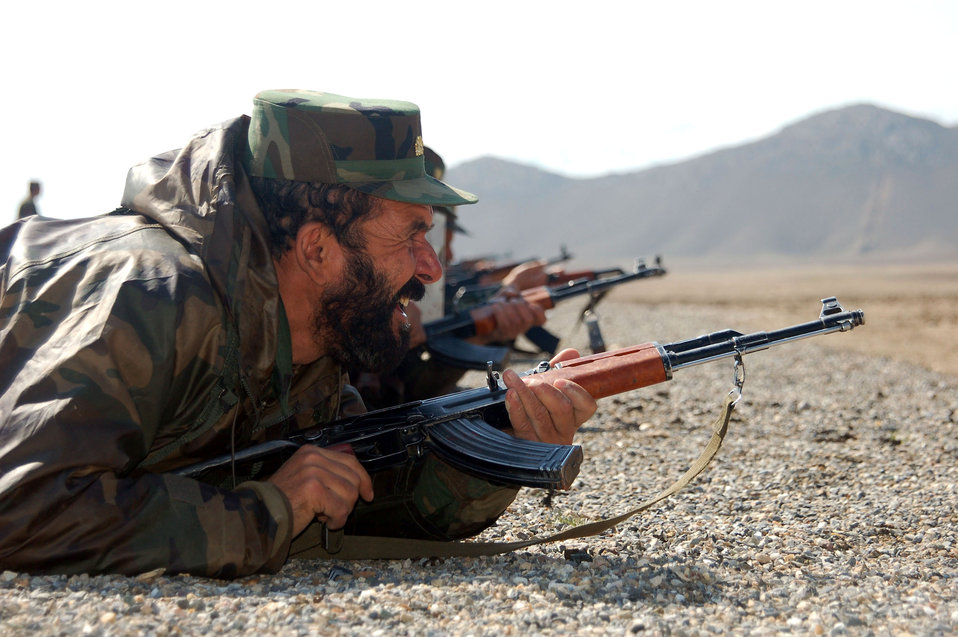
At home on the range

An Afghan National Army lieutenant prepares to fire his AK-47 on the 150-meter target range March 14 at the Kabul National Military Center.